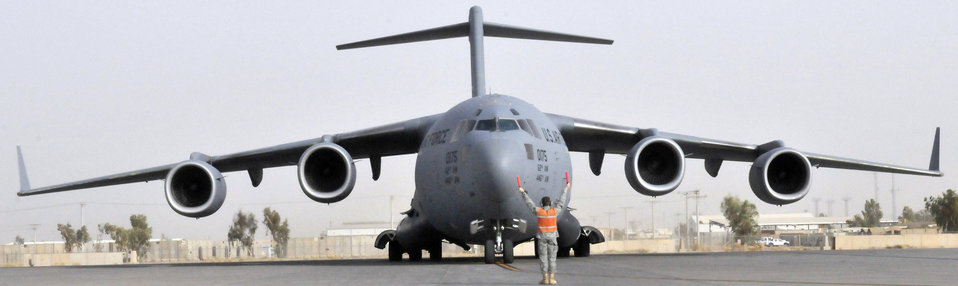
Balad Airmen

Airman 1st Class Robert Jacoby marshals a C-17 Globemaster III into its parking spot July 12, 2010, at Joint Base Balad, Iraq. Airman Jacoby is a 521st Air Mobility Operations Group, Det. 5 communication-navigation equipment maintainer.